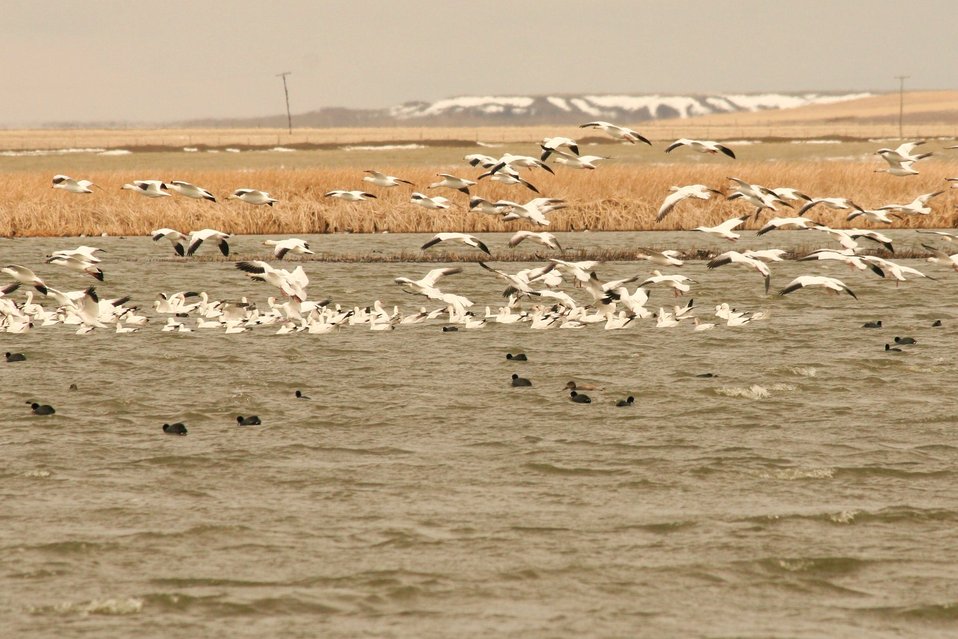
A Flock of Snow Geese on the Refuge

The lands of the refuge were established to protect and provide habitat for migratory birds that cross State lines and international borders and are by law a Federal trust responsibility.

The refuge is of great value to waterfowl and shorebirds, as well as other migrating water-dependent bird species, because of the diversity of wetland and upland habitats that provide for the diverse life cycle needs of these species.